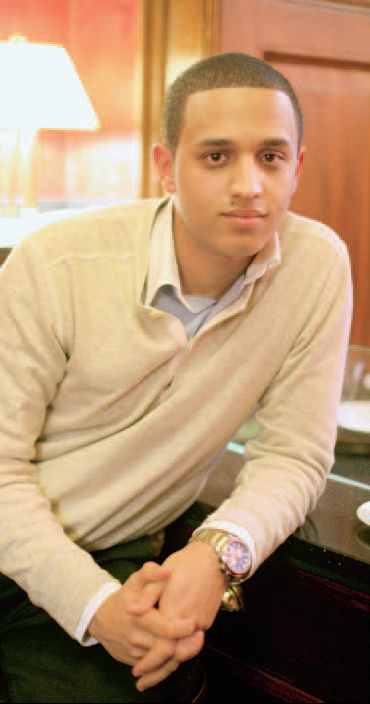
Deutsch: Bild des Bundesvorsitzenden der Schüler Union Deutschlands, Younes Ouaqasse